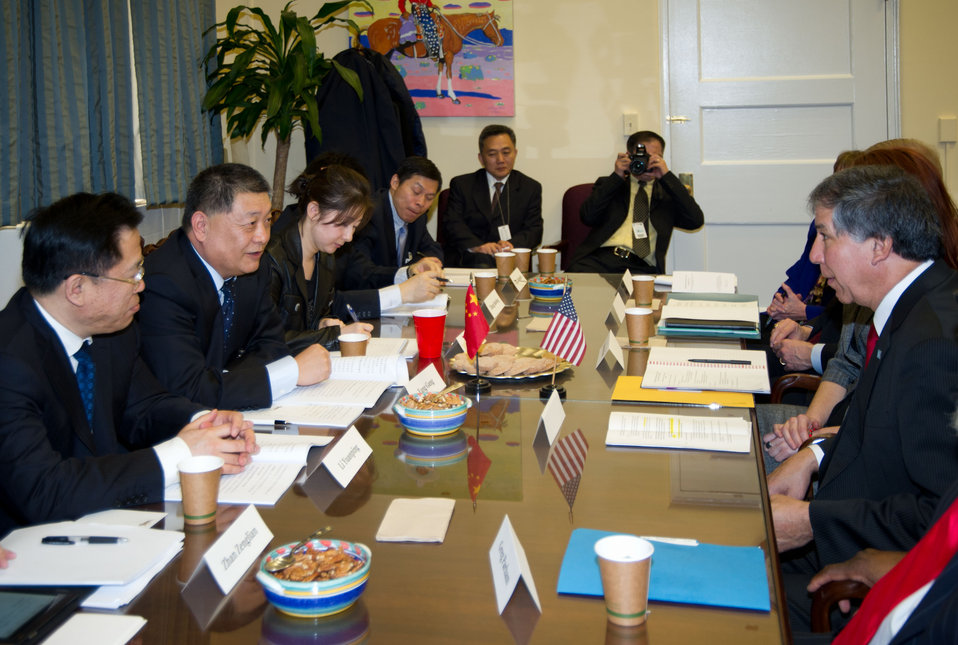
Agriculture Under Secretary for Marketing and Regulatory Programs Ed Avalos (right) and Vice Minister Yang Gang , General Administration of Quality Supervision, Inspection and Quarantine (AQSIQ) from China discussed the benefits of the Memorandum of Understanding (MOU) on fruit packing house suspensions; and export protocol for U.S.-origin breeding chickens (including hatching eggs and day-old chicks), on Tuesday, Feb. 14, 2012, in Washington, D.C.